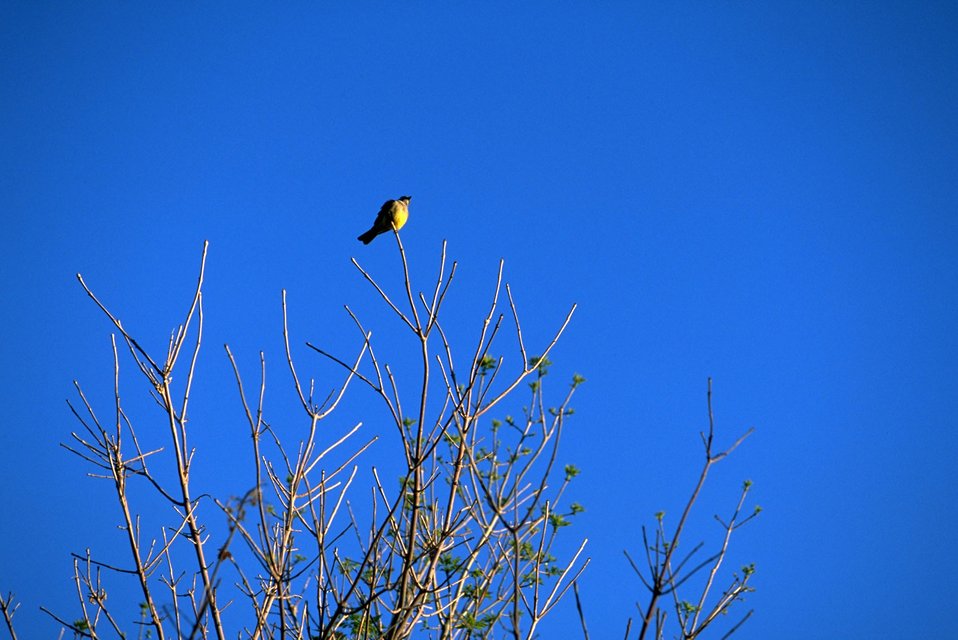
Yellow-breasted bird on the tree tops at Holter Lake Recreation Area